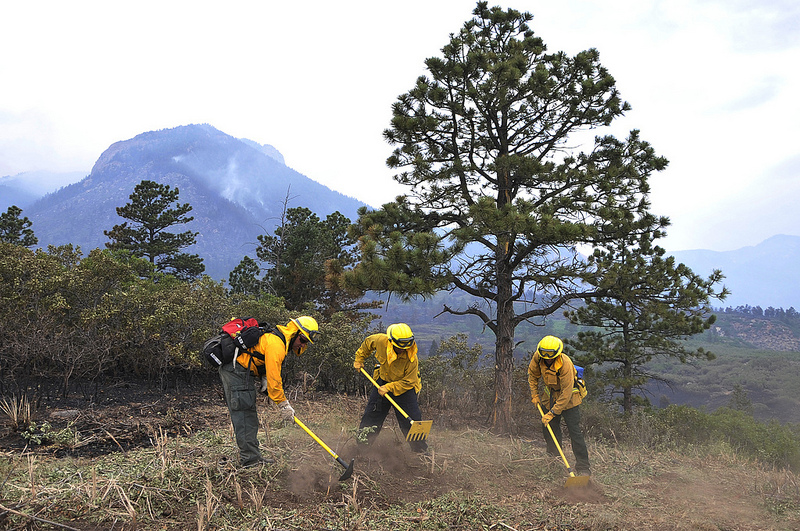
Academy firefighters battle Waldo Canyon fire

Tech Sgt. Jason Linta, Bobby Garza and Dean Prestia cut lines to create a firebreak to prevent fires from jumping at the U.S. Air Force Academy, Colo., on June 28, 2012. Sergeant Linta is a firefighter assigned to the Academy and Garza and Prestia are firefighters assigned to Buckley Air Force Base, Colo. The Waldo Canyon fire has destroyed more than 18,000 acres in the Colorado Springs area.